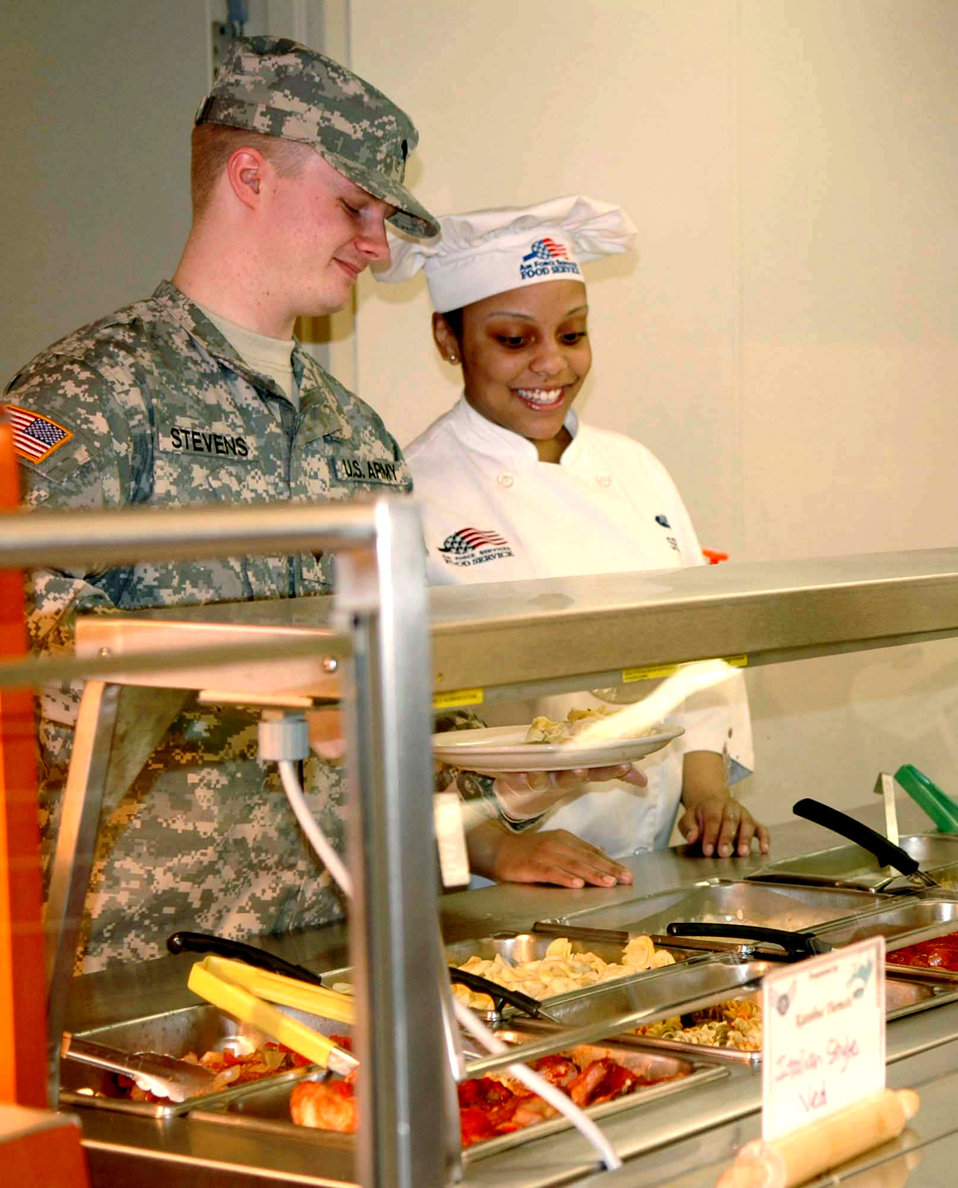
Airmen, Soldier nutrition specialists cook, train together

Army Spc. Ezekiel Stevens and Airman 1st Class Tamika Seda work together dishing up a dinner at the Warrior Dining Facility at Fairchild Air Force Base, Wash. Specialist Stevens was part of a training program that allowed Soldiers from the 396th Combat Support Hospital in Spokane to work with Airmen in the services career field. Airman Seda is assigned to the 92nd Services Squadron.